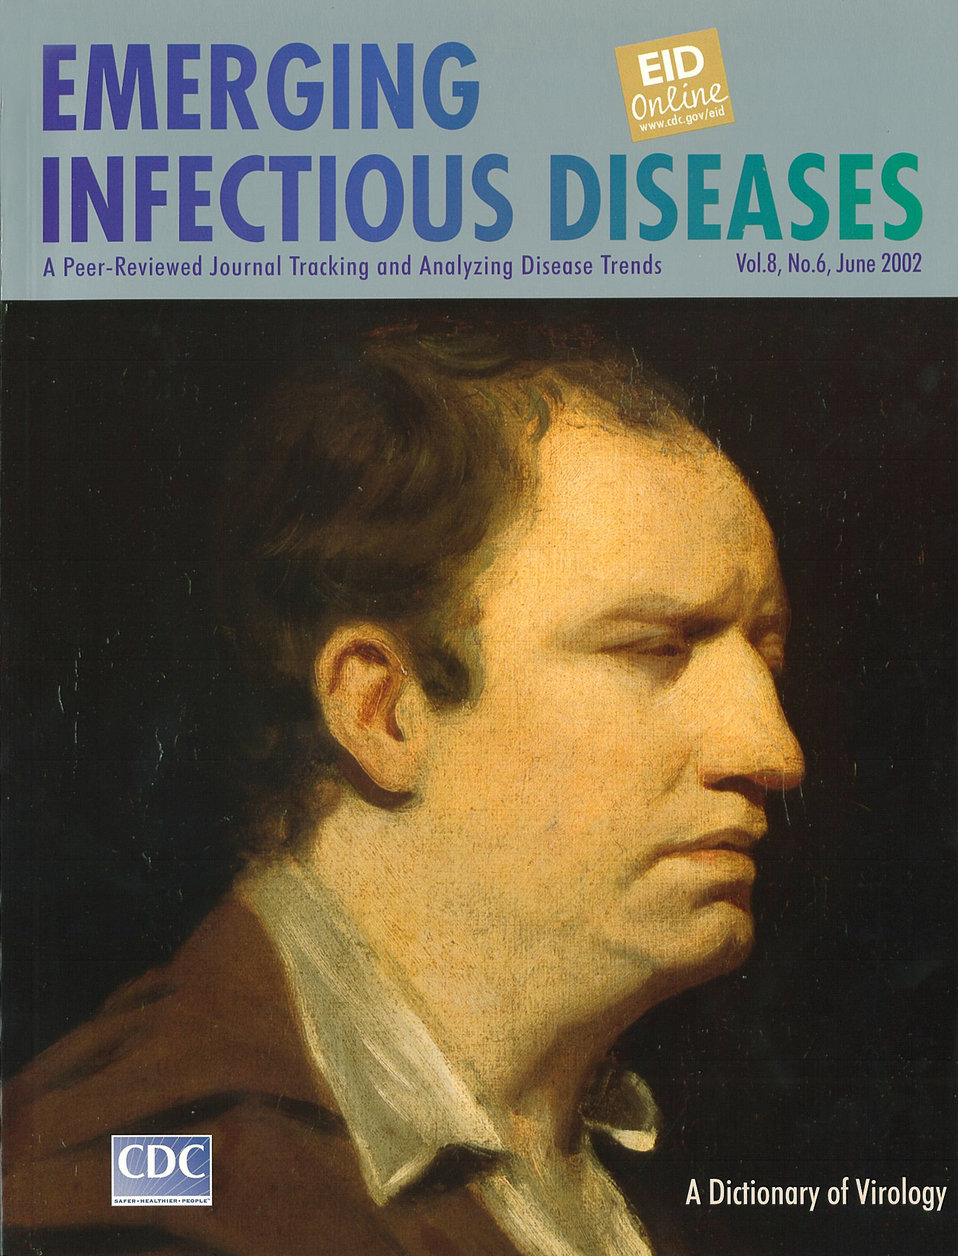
Emerging Infectious Diseases (EID) cover artwork for Volume 8, Number 6, June 2002 issue.